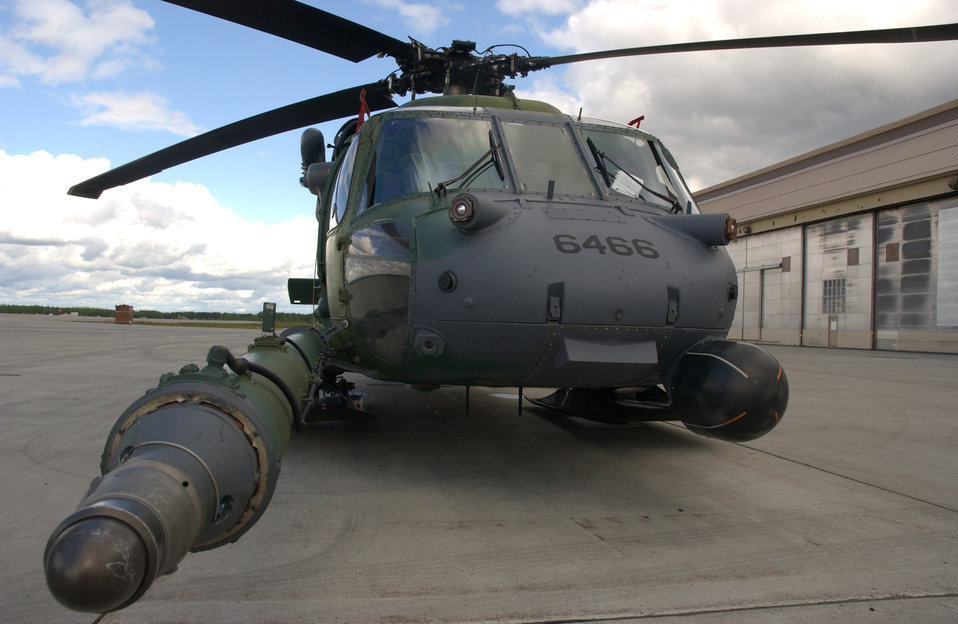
Hawk on the line

EIELSON AIR FORCE BASE, Alaska -- An HH-60G Pave Hawk helicopter sits ready for a mission here May 18. The primary mission of the helicopter is to conduct day or night operations into hostile environments to recover downed aircrew or other isolated troops during war. It is assigned to the 210th Rescue Squadron's, Detachment 1.